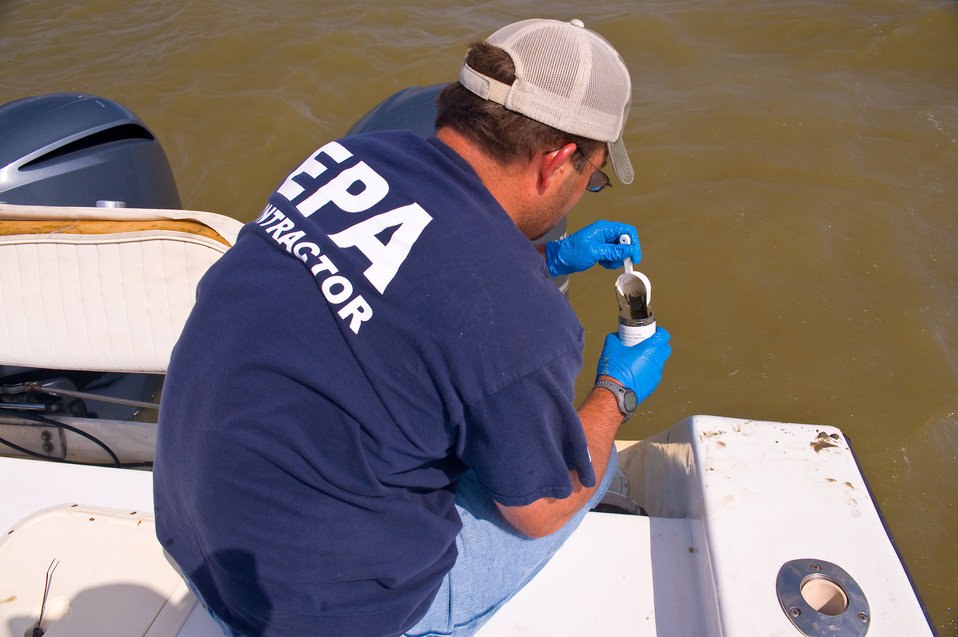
Sediment Sampling in response to the BP oil spill

May 12, 2010. Sediment sampling, Jarrod Redwine, VTECH Environmental Services, EPA contractor.